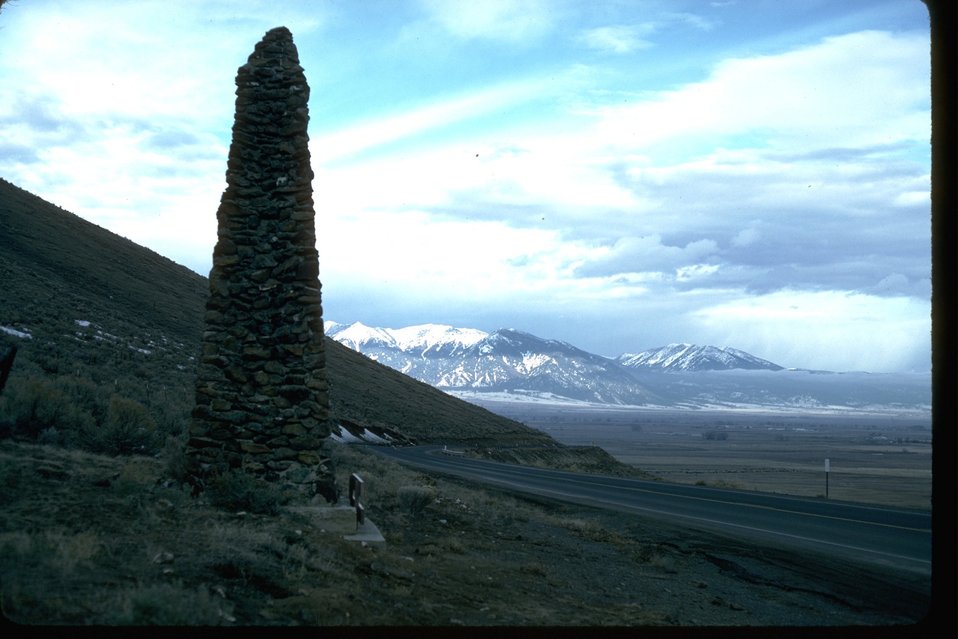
Kiwanis O.T. Marker near the NHOTIC.